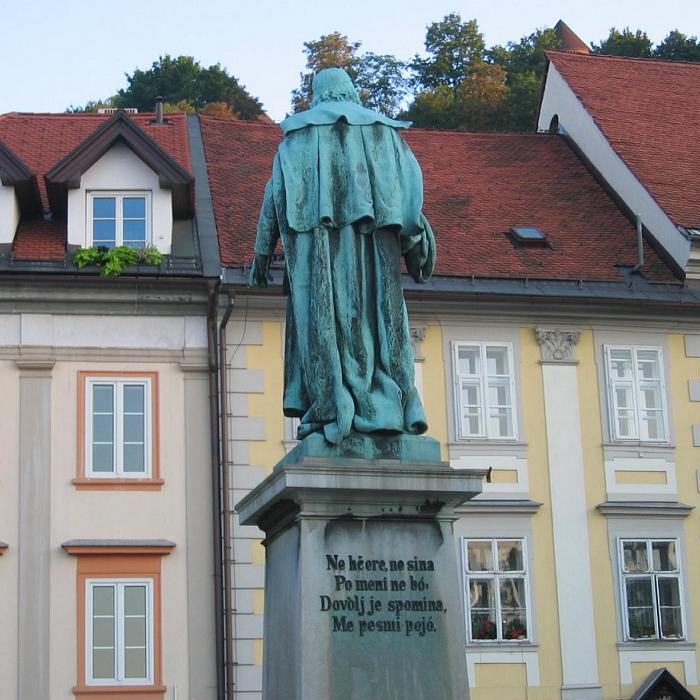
Valentin Vodnik (Slovenian poet and catholic priest) monument (back side, with a poem) - at Ljubljana Vodnik square Translation: Neither a son nor a daughter will live afer me; enough of rememberance, I am sung by (my) songs.